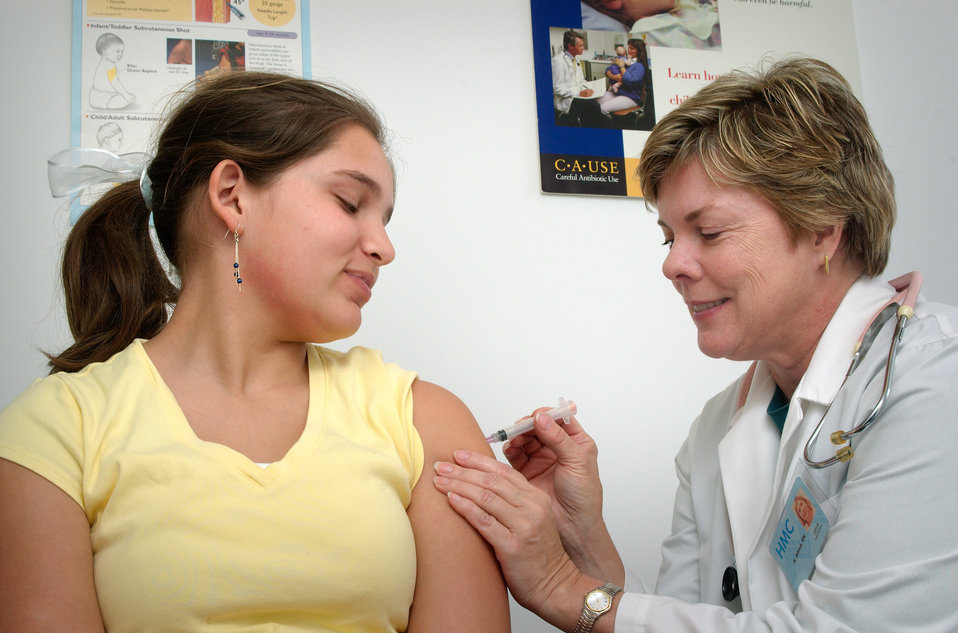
The smiling twelve-year old girl in this 2006 image was in the process of receiving an intramuscular vaccination in her shoulder muscle of her left arm.